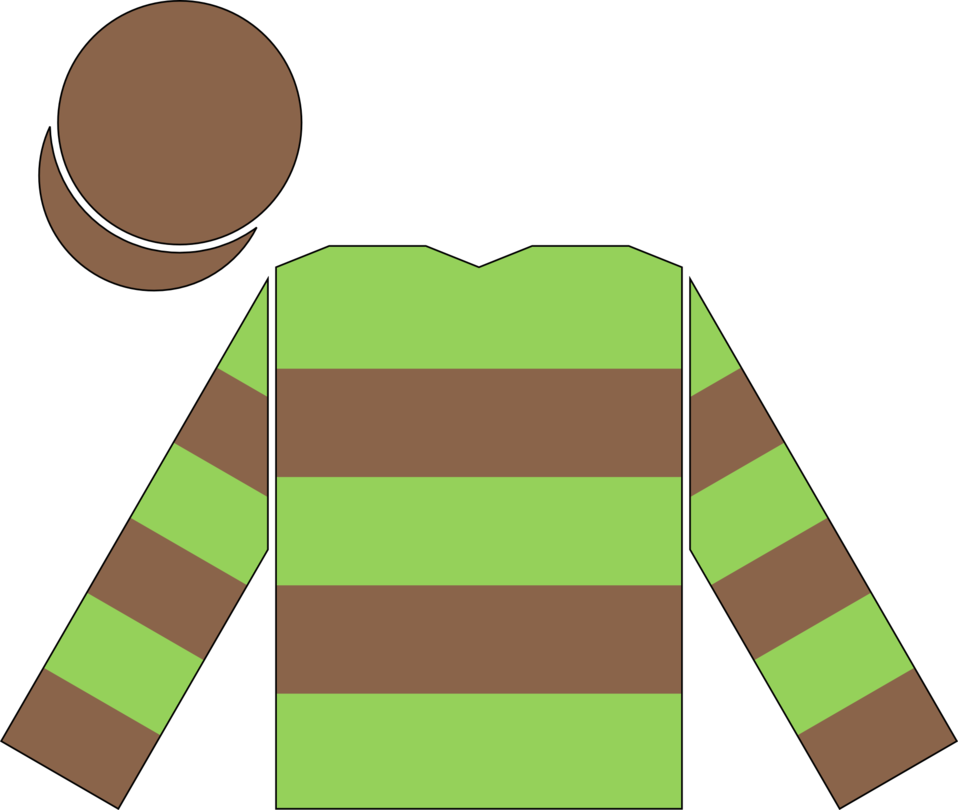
The en:racing silks of the Aga Khan (second colours), as worn by the jockey of en:Kahyasi to victory in the en:1988 Epsom Derby.